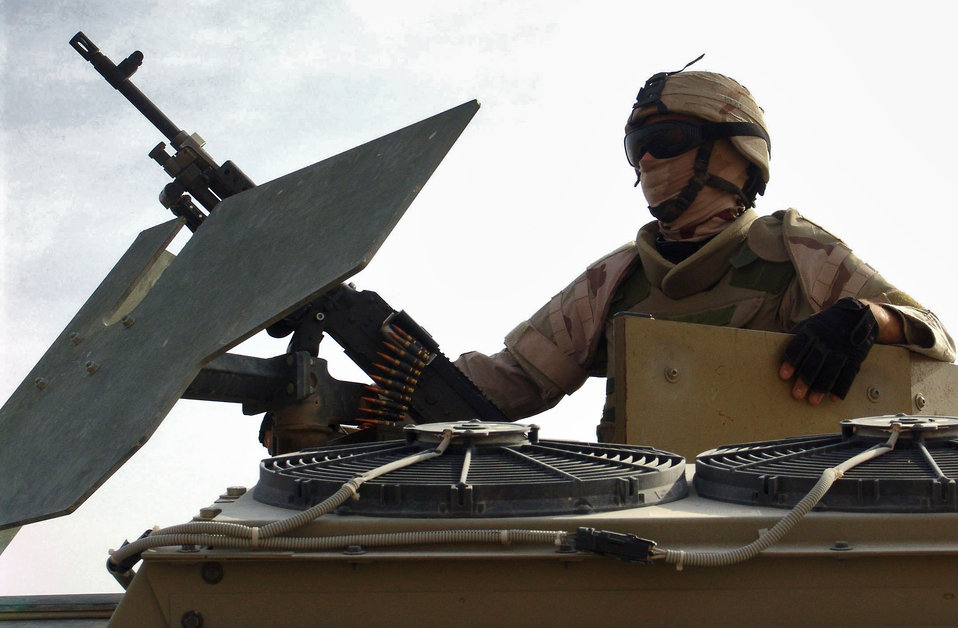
Operation Iraqi Freedom

CAMP BUCCA, Iraq (AFPN) -- Airman 1st Class Samuel Hicks, a 586th Expeditionary Security Forces Squadron security forces member, scans the roadside and horizon from the gun turret of his vehicle. The 586th ESFS provides base and area security and convoy escorts here.